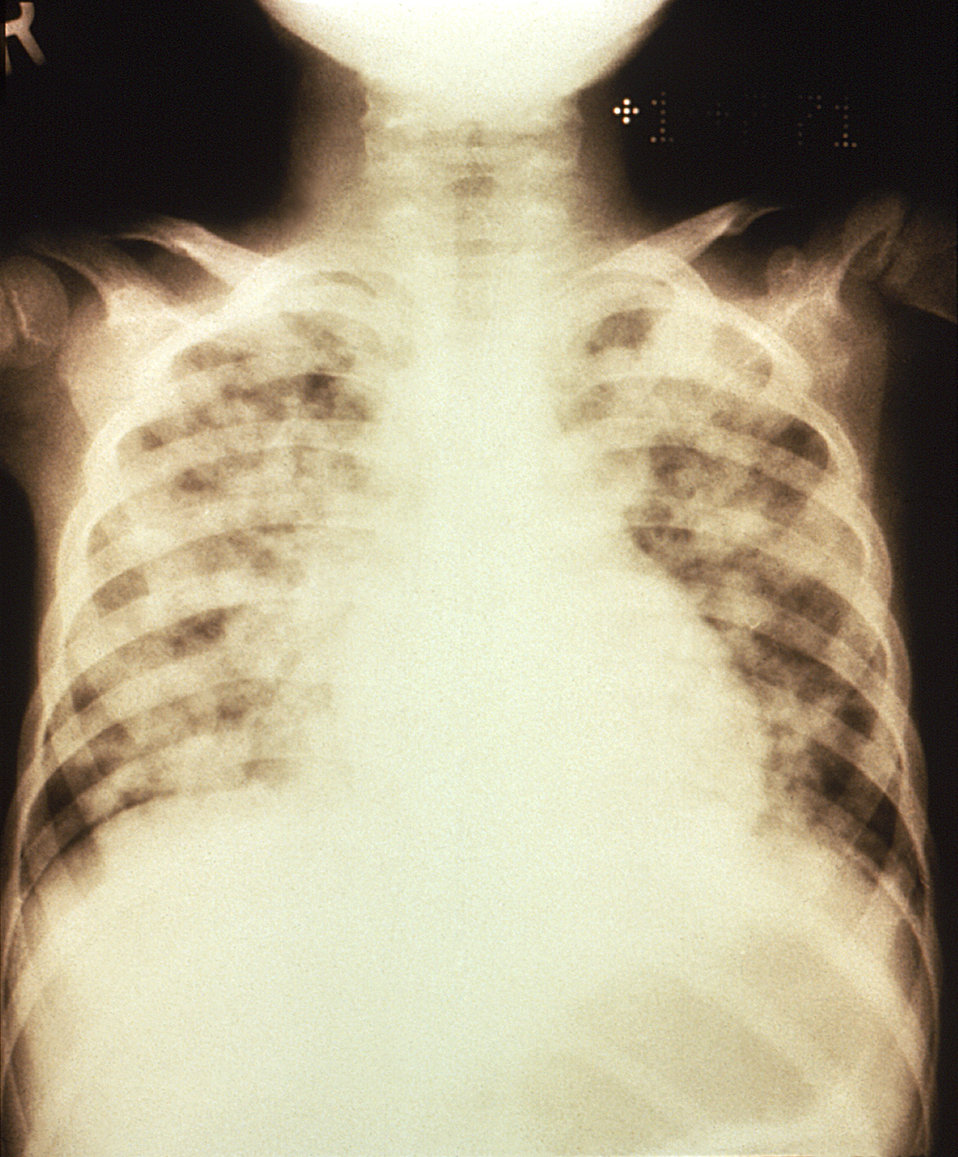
This child's chest x-ray revealed the onset of bilateral pulmonary effusion due to chickenpox pneumonia.